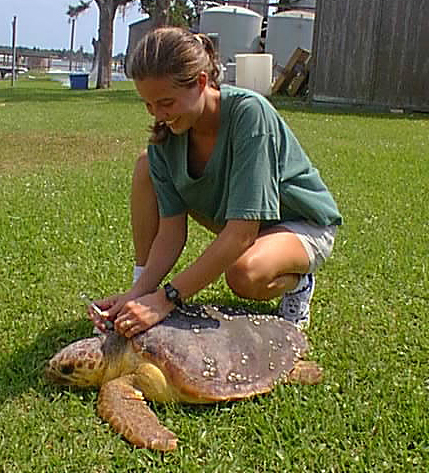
Environmental Contaminants

NIST research biologist Jennifer M. Keller taking a blood sample from a loggerhead turtle as part of her study looking at the health impacts of perfluorinated compounds (PFCs) on the endangered marine reptile.